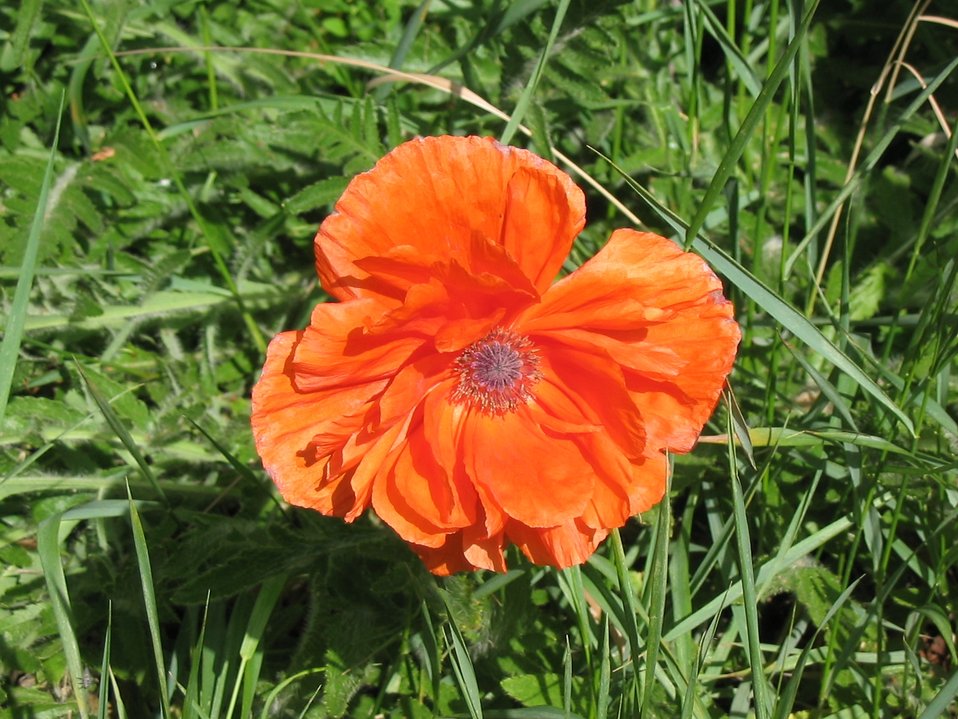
Orange Flower